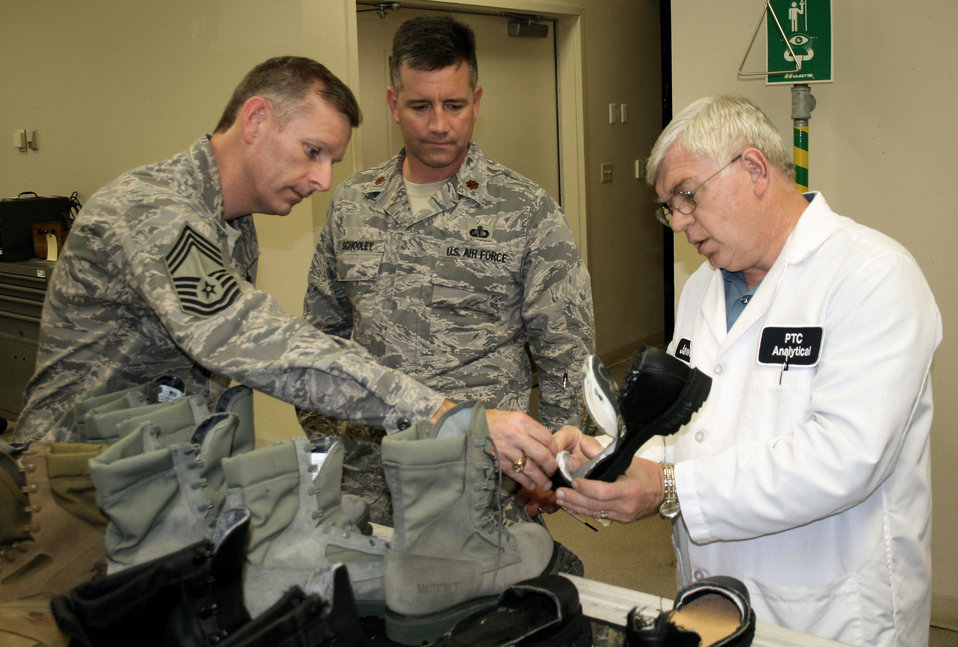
New AAFES chief dresses down uniform issues

Chief Master Sgt. Jeffry Helm and Maj. Brian Schooley inspect a boot after a test by Joe Jaworski, supervisory chemist, during their visit to Defense Supply Center Philadelphia, Oct. 23. Chief Helm and Major Schooley toured DSCP and discussed Army and Air Force uniform issues with the clothing and textiles director. Chief Helm is the Army and Air Force Exchange Service enlisted advisor to the commanding general. Major Schooley is the AAFES Air Force uniform program manager.